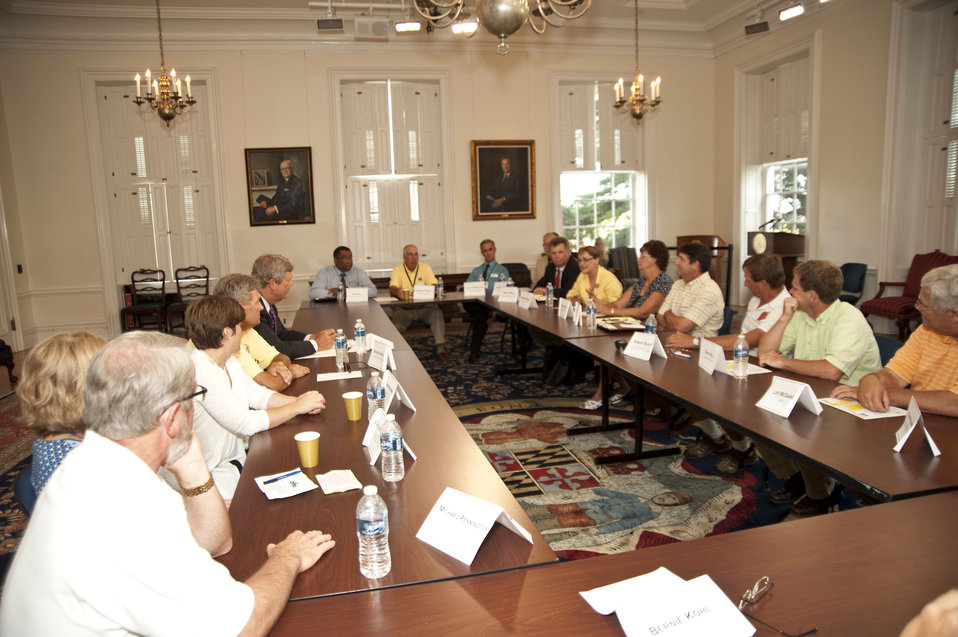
Agriculture Secretary Tom Vilsack meeting with Maryland Agricultural Leaders for a round table discussion in Annapolis, MD, on Thursday, July 21, 2011.